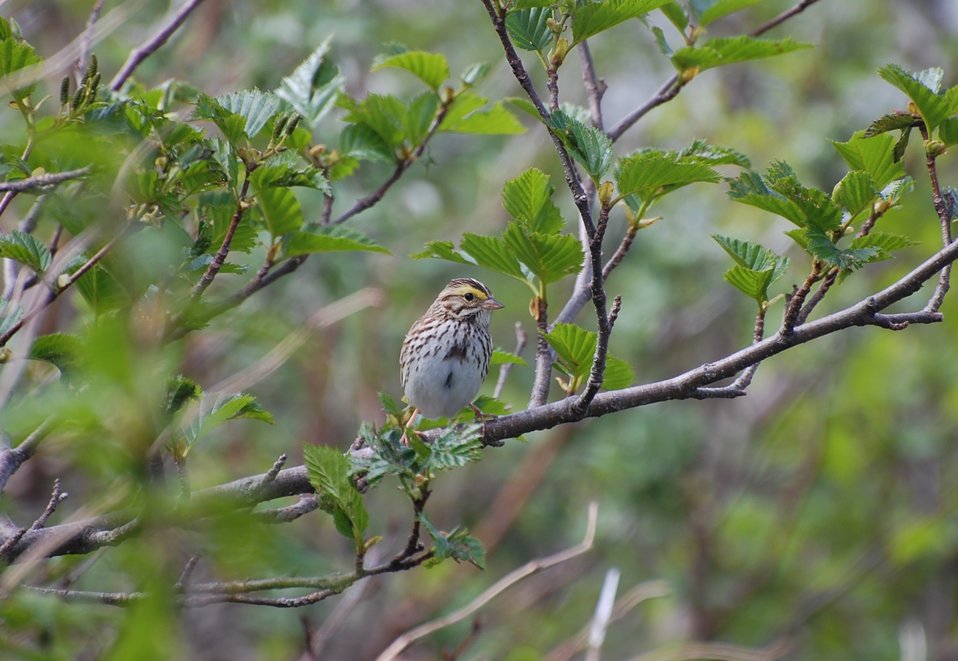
Savannah Sparro

Izembek National Wildlife Refuge